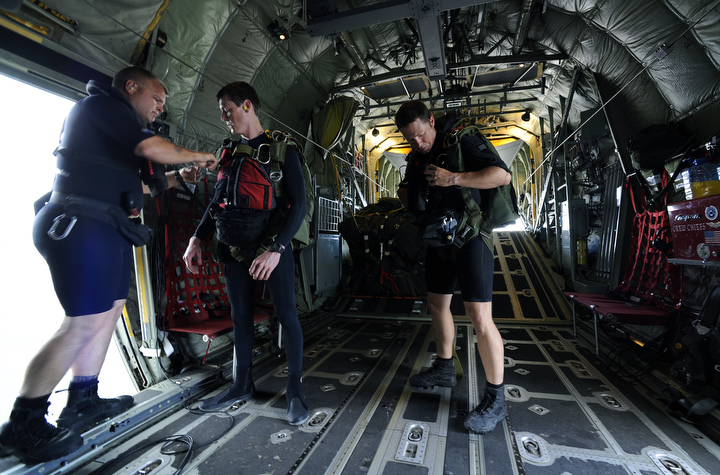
Operation Southern Partner

Pararescueman and jump master Senior Master Sgt. Michael Fleming (left) checks the parachute harness of Senior Airman Matt Medlock while Capt. Travis Shepard, a combat rescue officer, awaits a buddy check June 9 before they demonstrate a rigged alternate method zodiac, or RAMZ, capability jump into the Caribbean Ocean for members of the Belize National Coast Guard and local media during Operation Southern Partner.